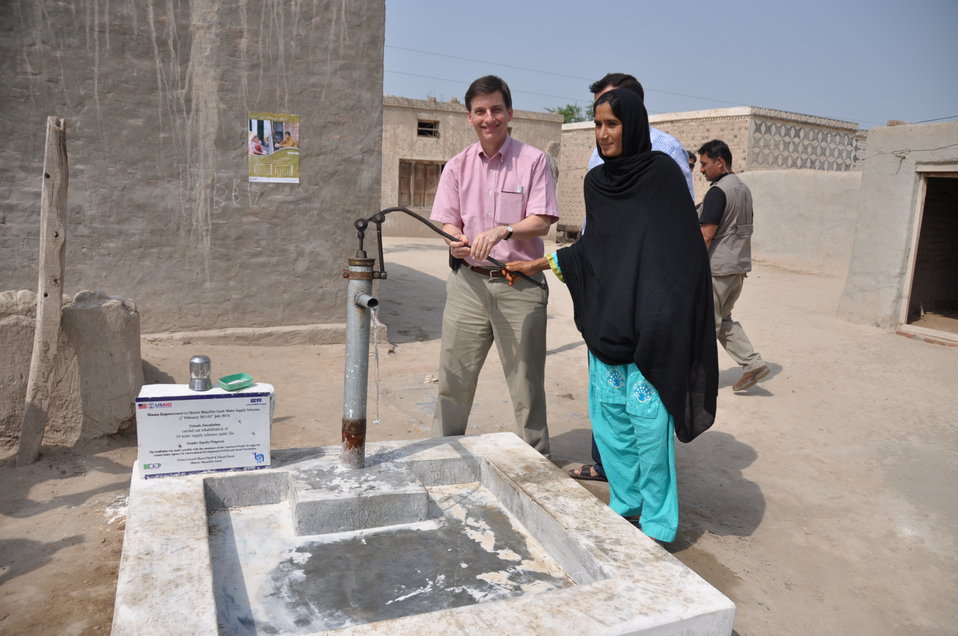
USAID Gender Equity Program